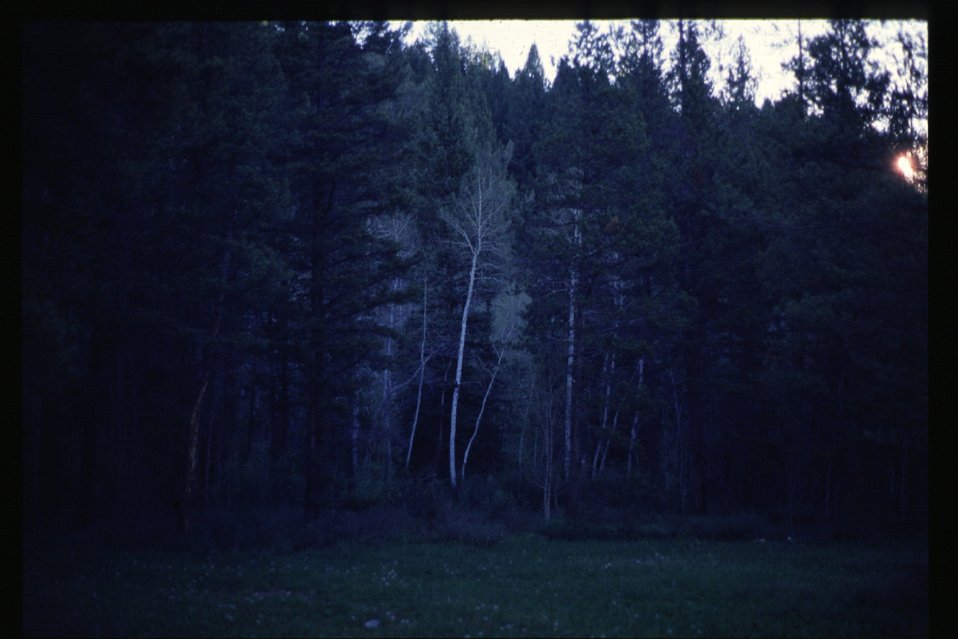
Forestry Couer d'Alene Field Office UCSC Upper Columbia Salmon Clearwater